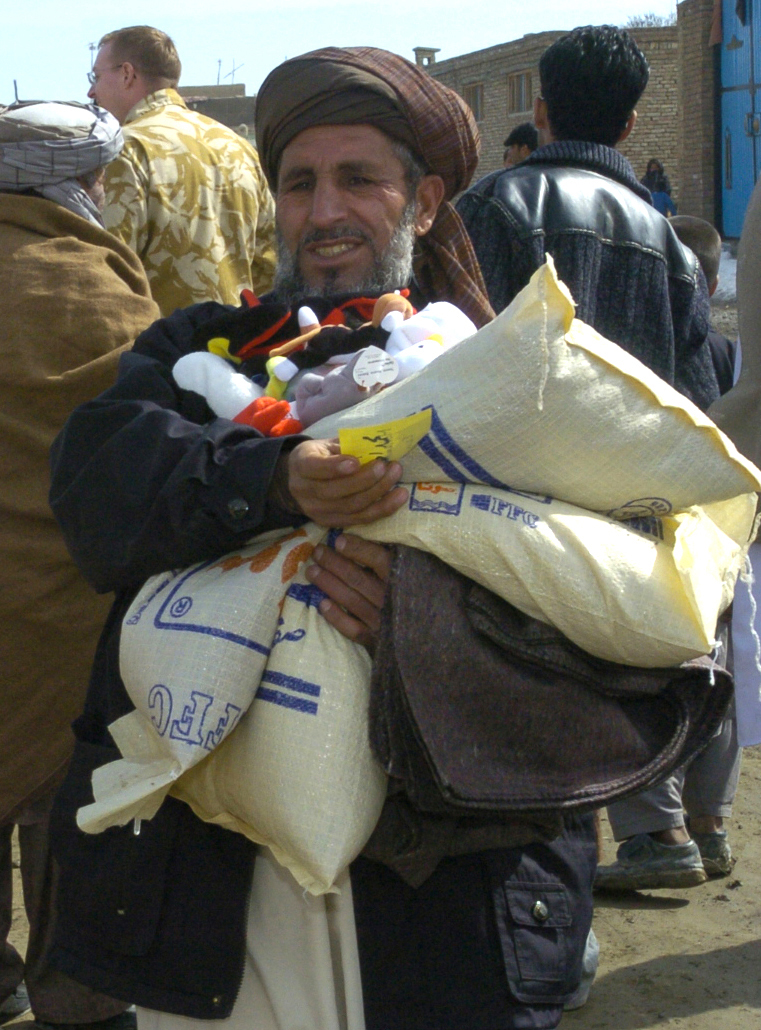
Americans reach out, help Afghans

KABUL, Afghanistan -- An Afghan carries toys and beans he just received from coalition forces during a humanitarian visit here Feb. 22. Soldiers of the 105th Mobile Public Affairs Detachment collected more than 30 boxes of supplies from Oklahoma and Kansas, including toiletries, clothing, food, toys, school supplies and blankets for Afghan families.